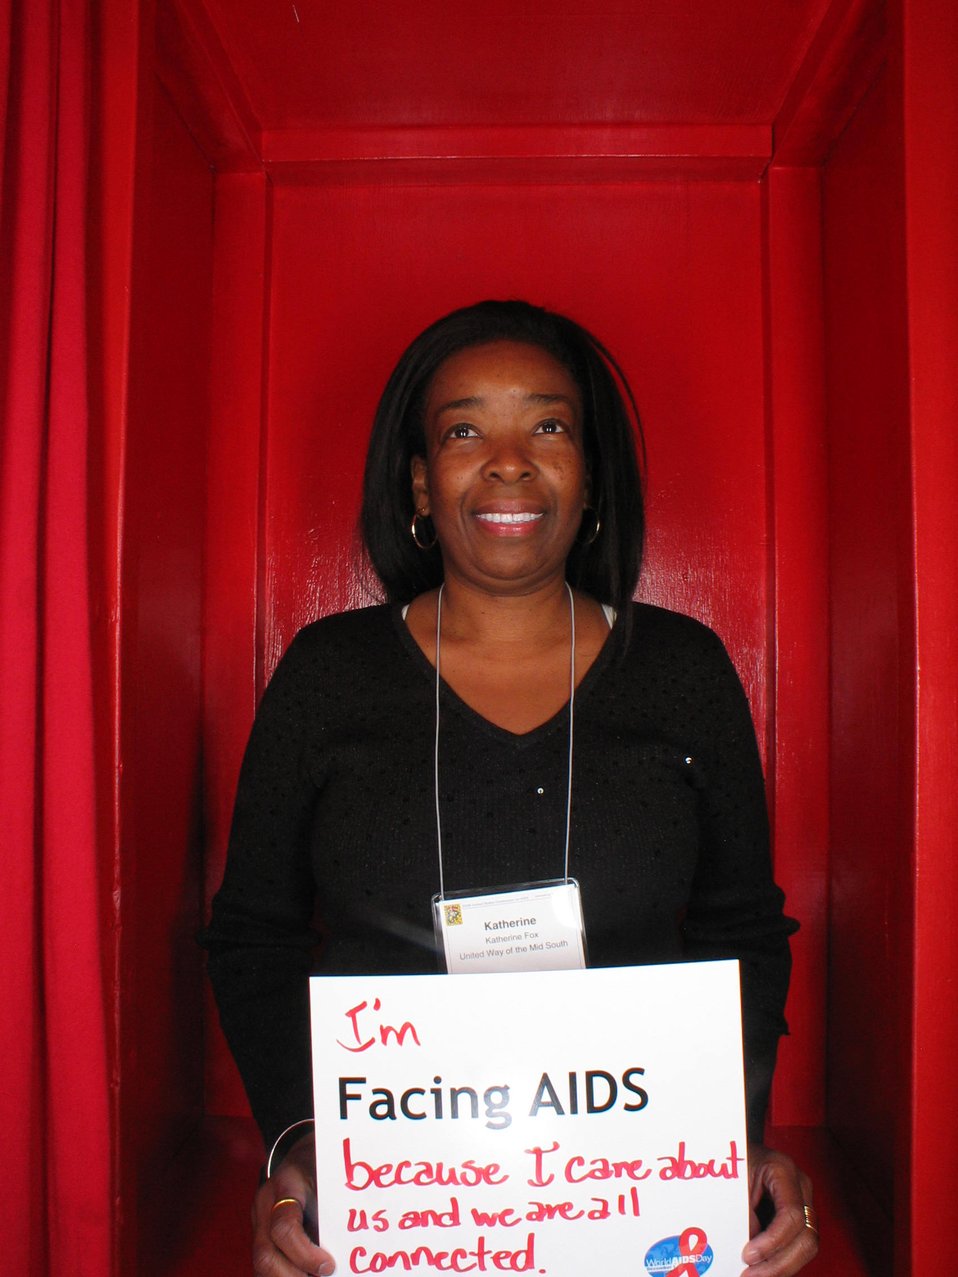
I'm Facing AIDS because I care about us and we are all connected.